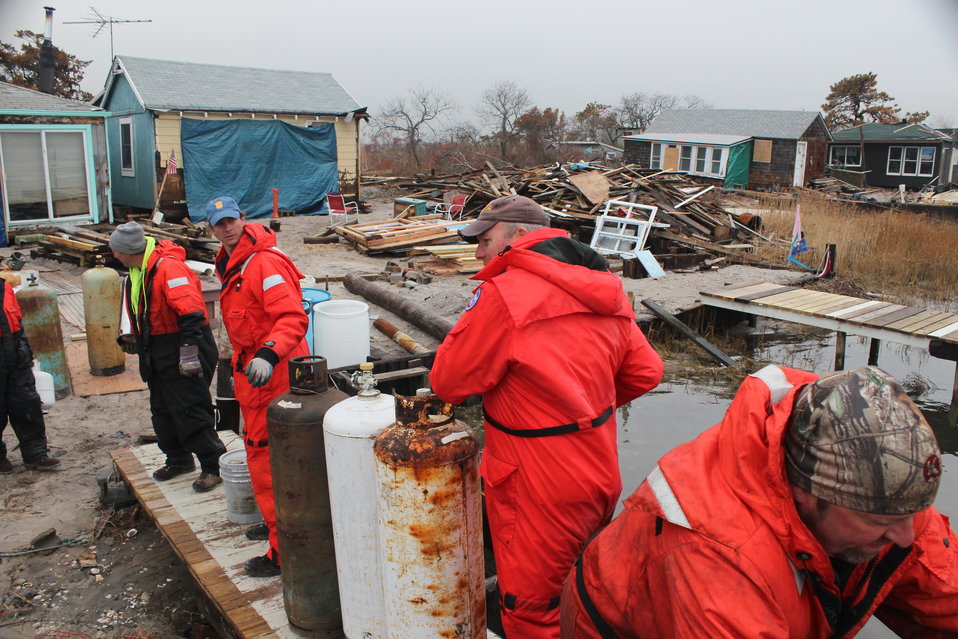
December 8, 2012 Assembly line makes light work of load up, Whig Inlet, Suffolk County, New York

This line up made loading more efficient and the narrow dock easier to navigate.